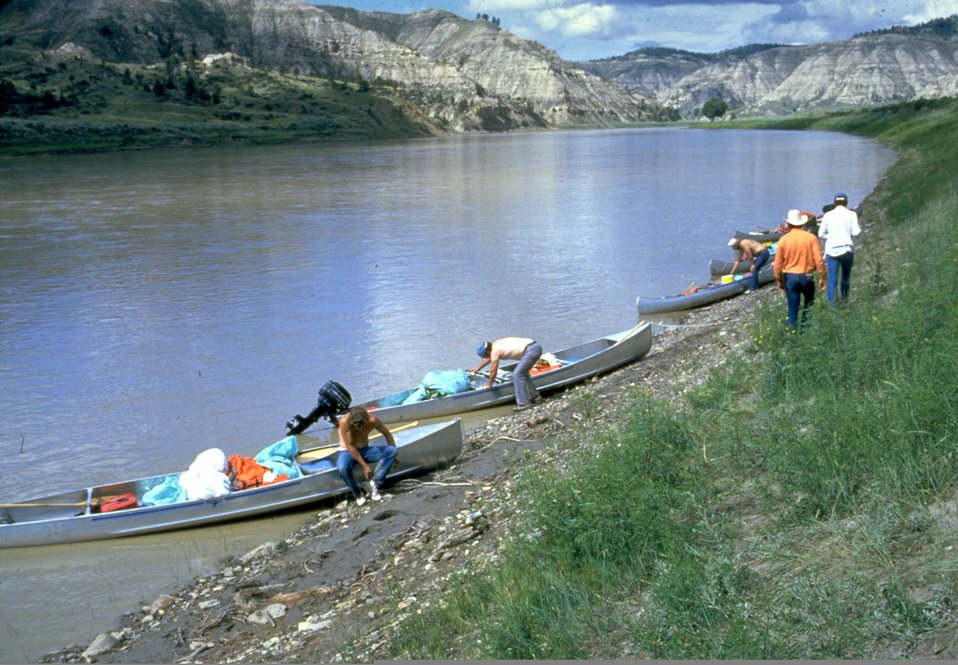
Missouri River with canoes